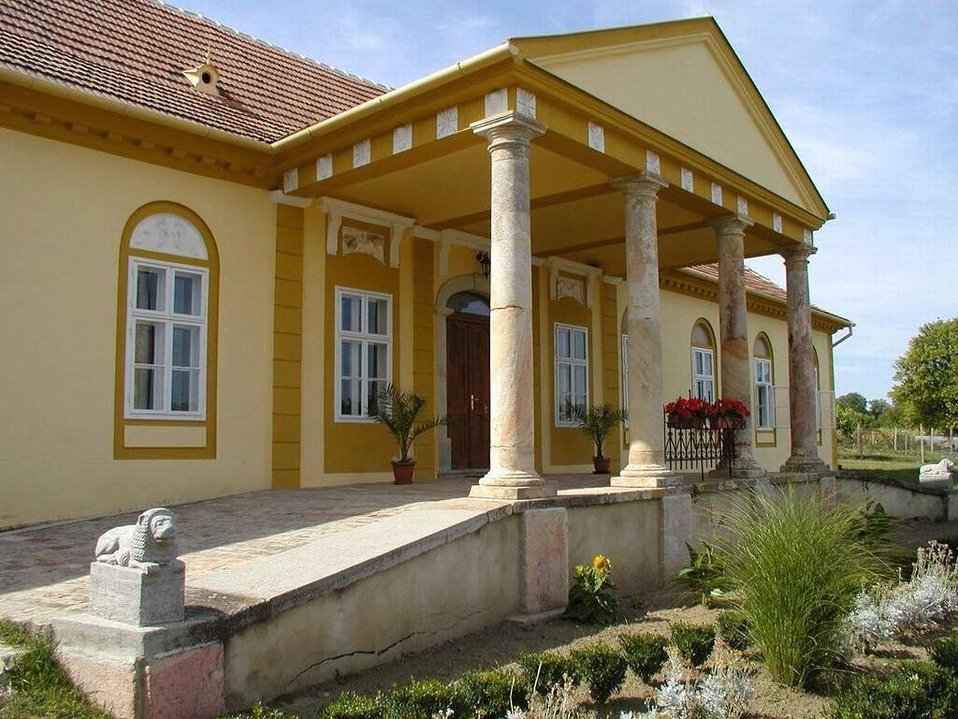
Kaštieľ Licencovanie: Autorom fotografie je Imrich Šimonek z Dubníka sk:Kategória:Presunúť na Commons This medium shows the protected monument with the number 404-11352/0 in the Slovak Republic.